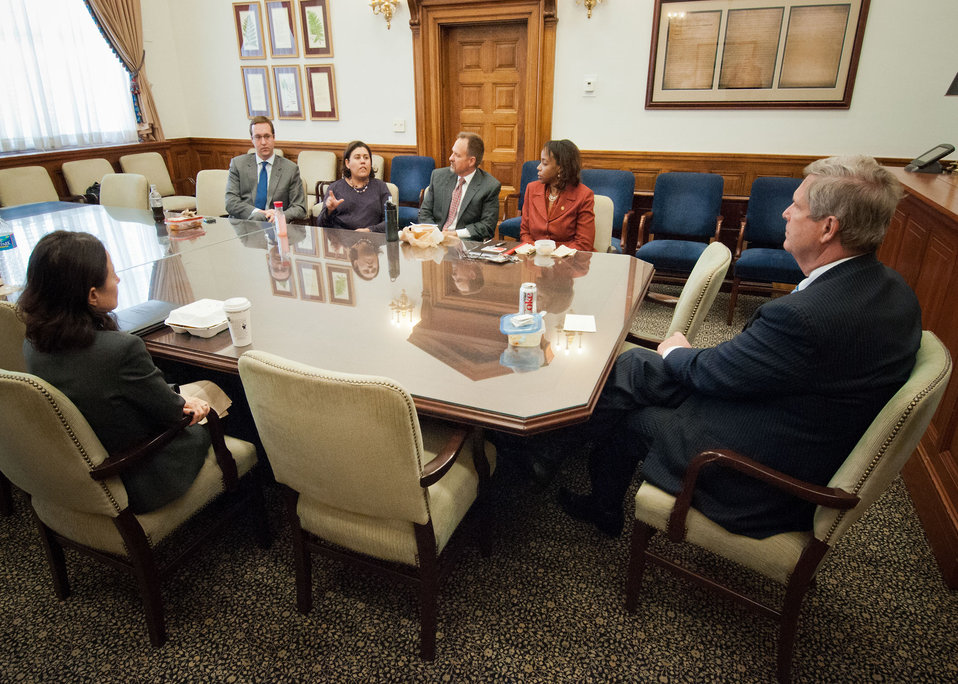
U.S. Department of Agriculture (USDA) Rural Development (RD) Senior Advisor Sylvia Bolivar addresses Agriculture Secretary Tom Vilsack with other USDA employees during a Brown Bag Lunch held with Secretary Vilsack in Washington, D.C. on Wednesday, Sept. 26, 2012. (L to R U.S. Department of Agriculture (USDA) Rural Development (RD) Rural Utilities Service (RUS) Deputy Administrator Jessica Zufolo, USDA Scheduling Deputy Director Toby Osherson, USDA Rural Development (RD) Senior Advisor Sylvia Bolivar, USDA Forest Service Robert Baird, USDA Ravoyne Payton, Chief Privacy Office, and Agriculture Secretary Tom Vilsack). Secretary Vilsack holds occasional Brown Bag Lunches to gain information and knowledge to assist in the administration of the affairs and programs of the Department, and to thank the employees for their diligent work to the Department and as public servants, as well as gaining knowledge of the professions of the employees. Secretary Vilsack was sincerely interested in learning to know the employees working for the Department.